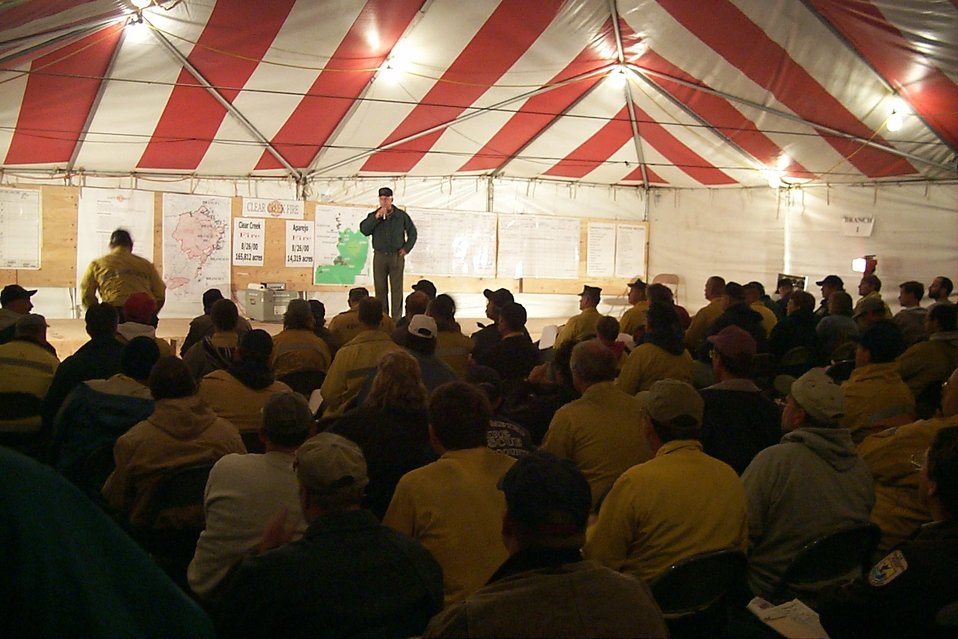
Incident Briefing Clearwater Fire Fire Salmon Field Office USRD Upper Snake River District